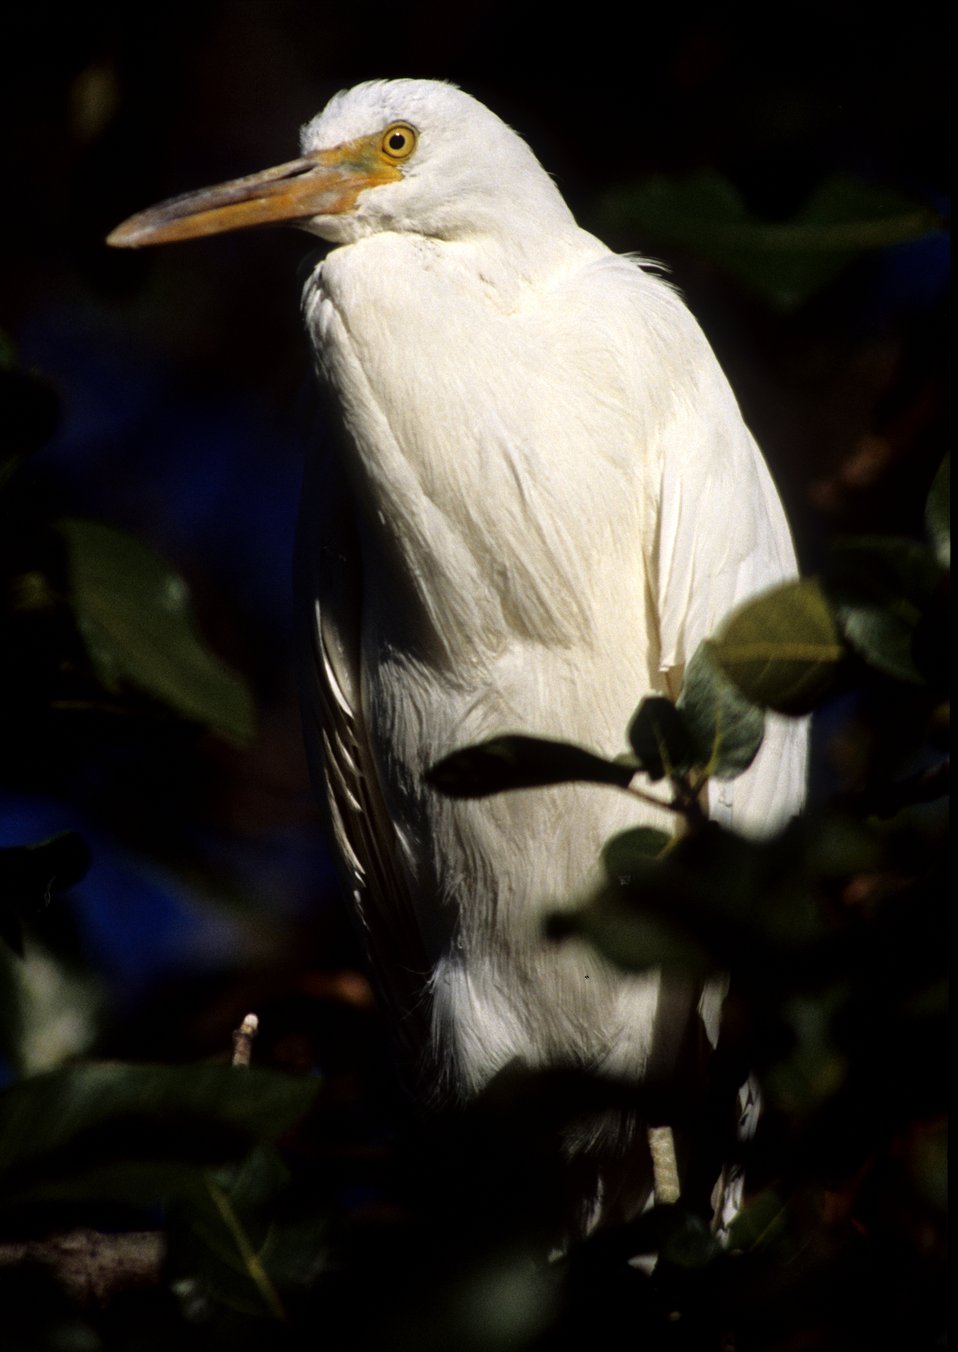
Cattle egret in a tree.